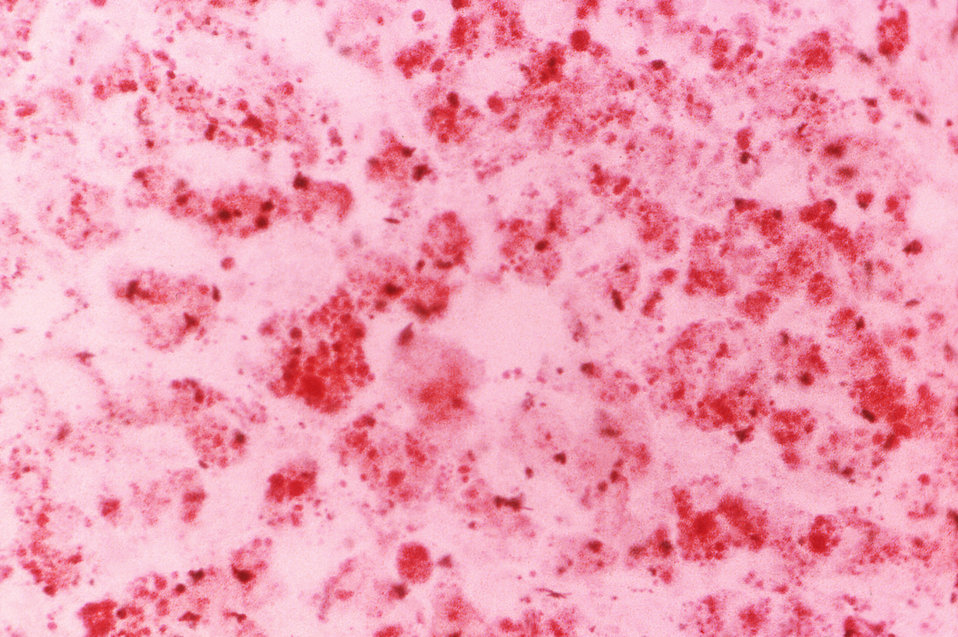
Under a magnification of 250X, this Sudan III-stained photomicrograph depicts the cytoarchitectural changes found in a liver tissue specimen extracted from a Lassa fever patient. Note the presence of 'microvacuolar fatty necrosis.'.